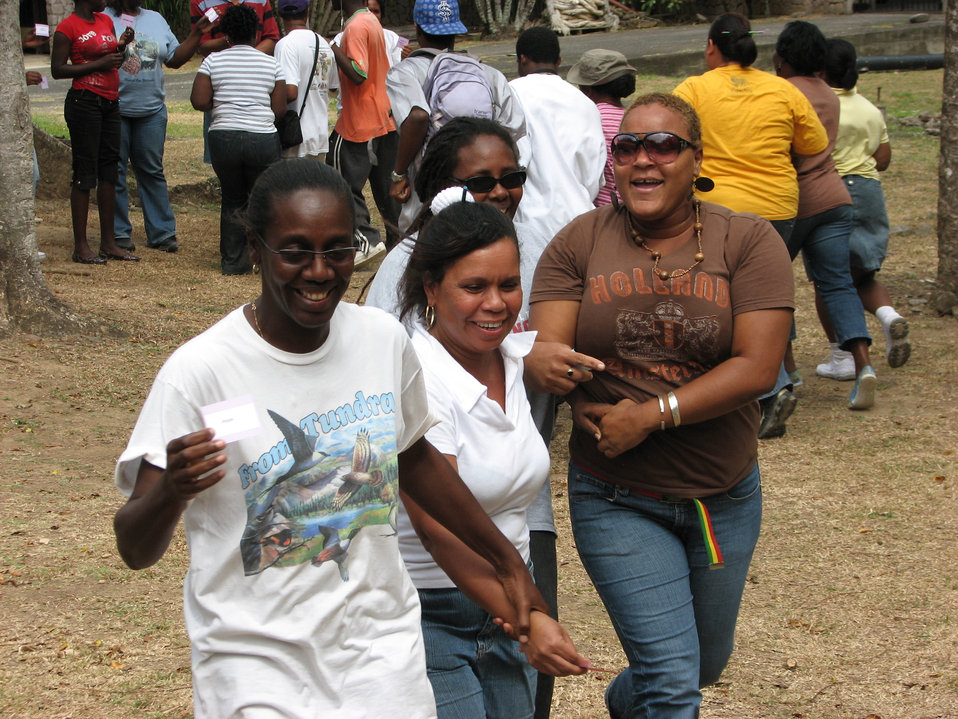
Food Chain Relay, Activity 2-I - 3

Relay race activity to teach trainees about food chains during SCSCB training.